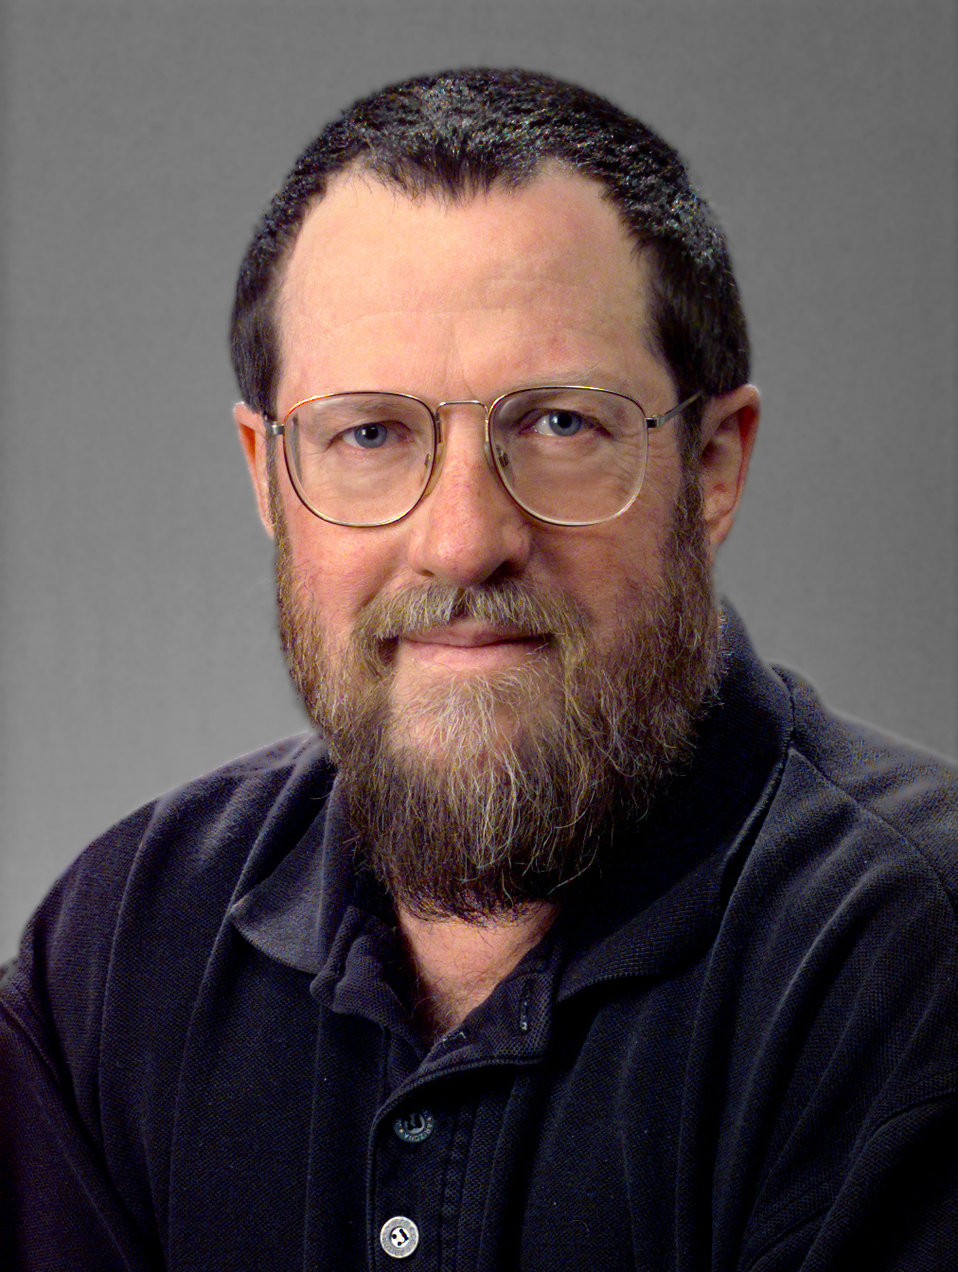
This is Dennis L. McDowell, fmr. Exec. Dir. of the Div. of Professional Development and Evaluation, DPDE, PHPPO, CDC, 1986-2003.